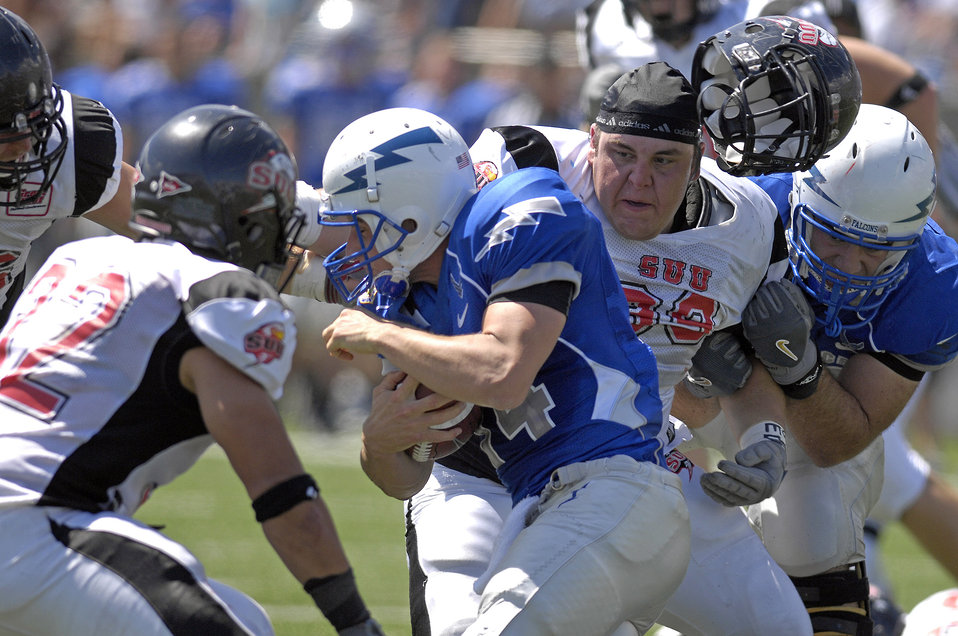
Falcon record two safeties in 41-7 rout

Quarterback Shea Smith battles for extra yards against Southern Utah University. Air Force dominated the game, winning 41-7.